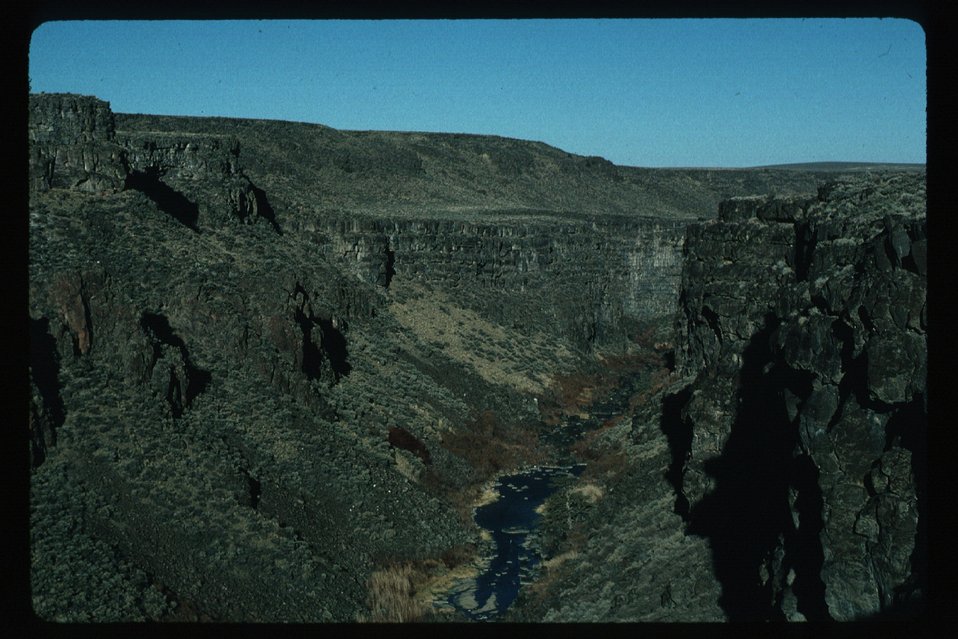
Salmon Creek Canyon Riparian Salmon Field Office USRD Upper Snake River District